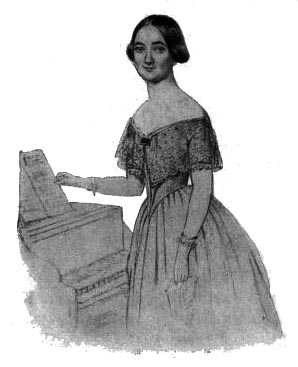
Hertha Westerstrand Svenska: Hertha Westerstrand